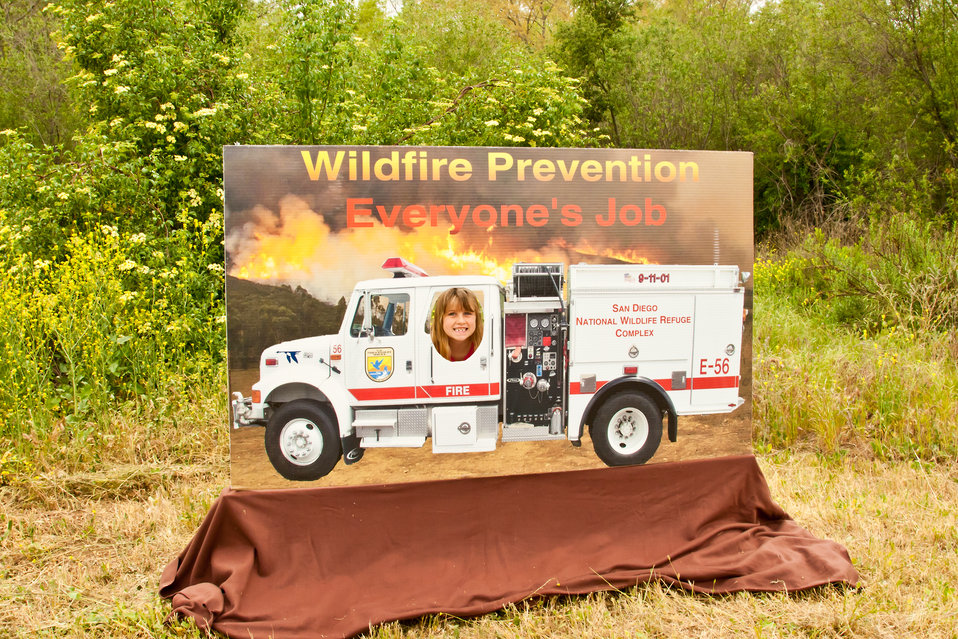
Smile! You're a Firefighter!